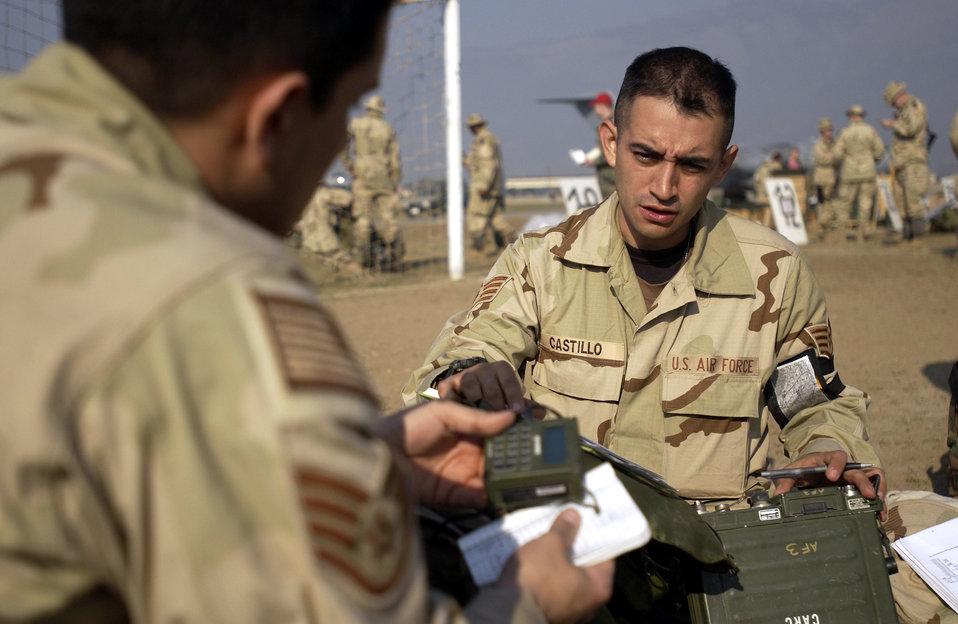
COMM Check

OPERATION IRAQI FREEDOM -- Air Force tactical air controllers assigned to the 173rd Airborne Brigade, check their communications equipment while preparing to be moved forward from an air base in Europe in support of Operation Iraqi Freedom on March 26.